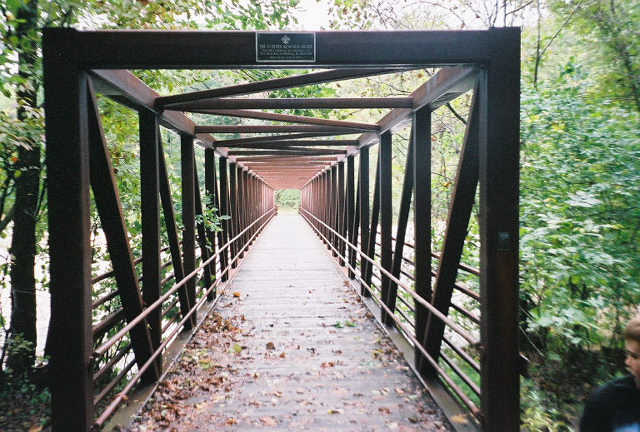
en:Camp Hart Bridge traversing en:Unami Creek